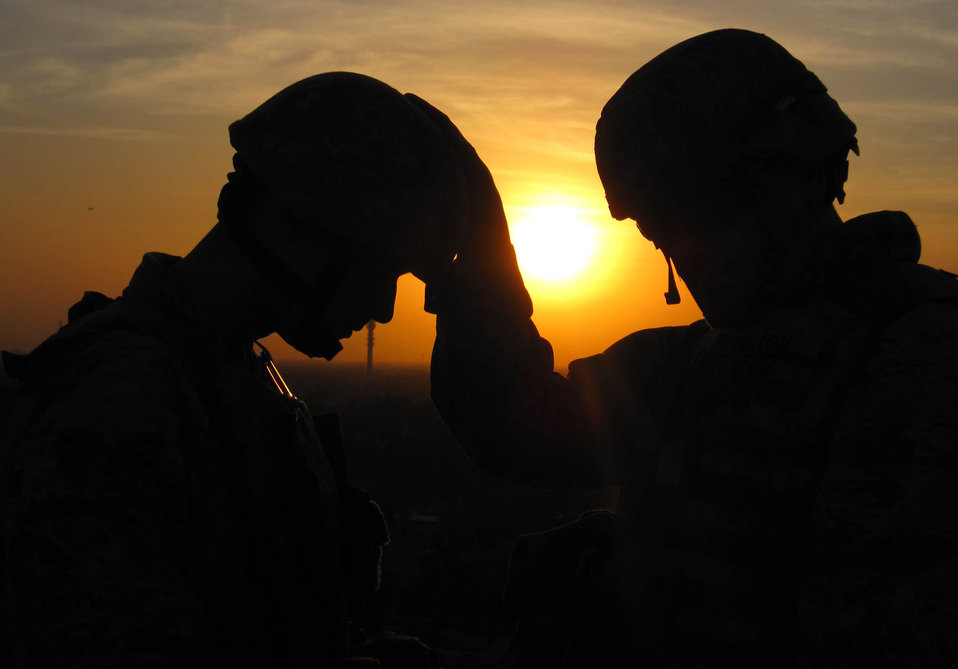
Chapel team goes outside wire for duty

Chaplain (Capt.) David Haltom provides spiritual guidance to a joint expeditionary tasked Airman in a combat zone Feb. 23 in Southwest Asia. Chaplain Haltom is the 732nd Air Expeditionary Group chaplain.